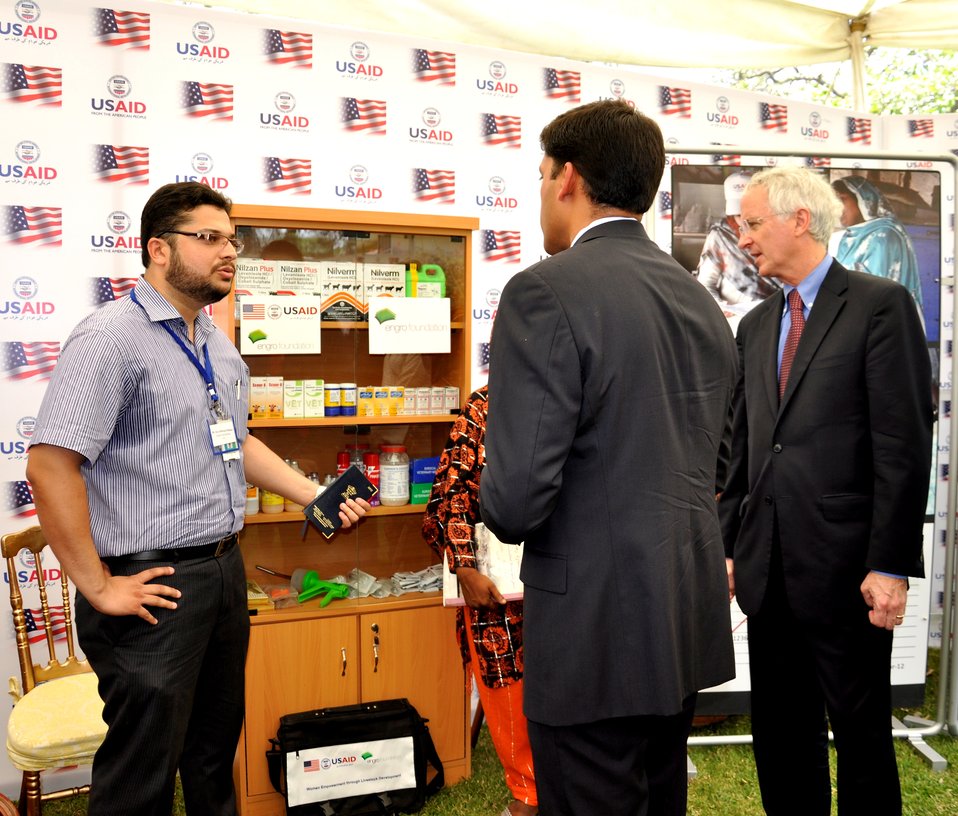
ICI representative while briefing his role under the Entrepreneurs Dairy project